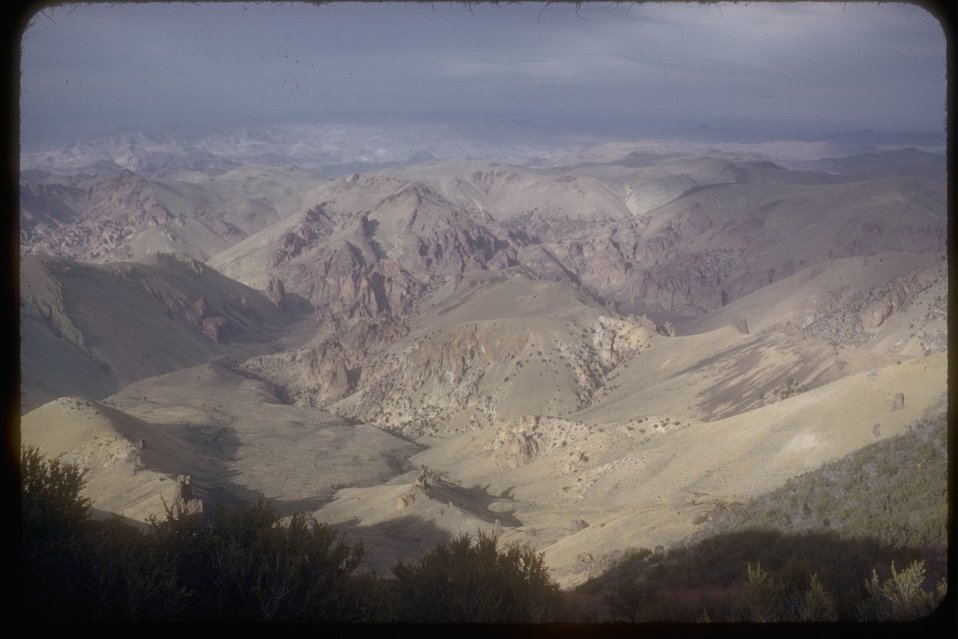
Overlook into mountainous area. Mahogany & Unit.